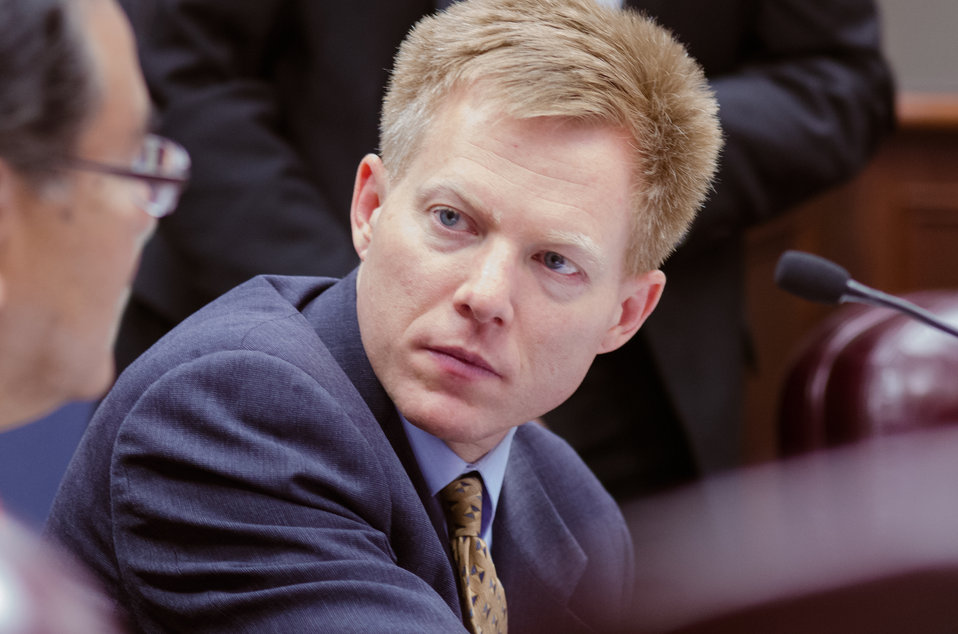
U.S. Department of Agriculture Senior Advisor to the Secretary on Tribal Relations and Office of Tribal Relations Acting Director Max Finberg, listens to Navajo Technical College President Elmer Guy's, left, opening remarks during the USDA and American Indian Higher Education Consortium Leadership Group Winter Meeting, at the USDA Whitten Building, Williamsburg Room, in Washington D.C., on Friday, Feb. 8, 2013.